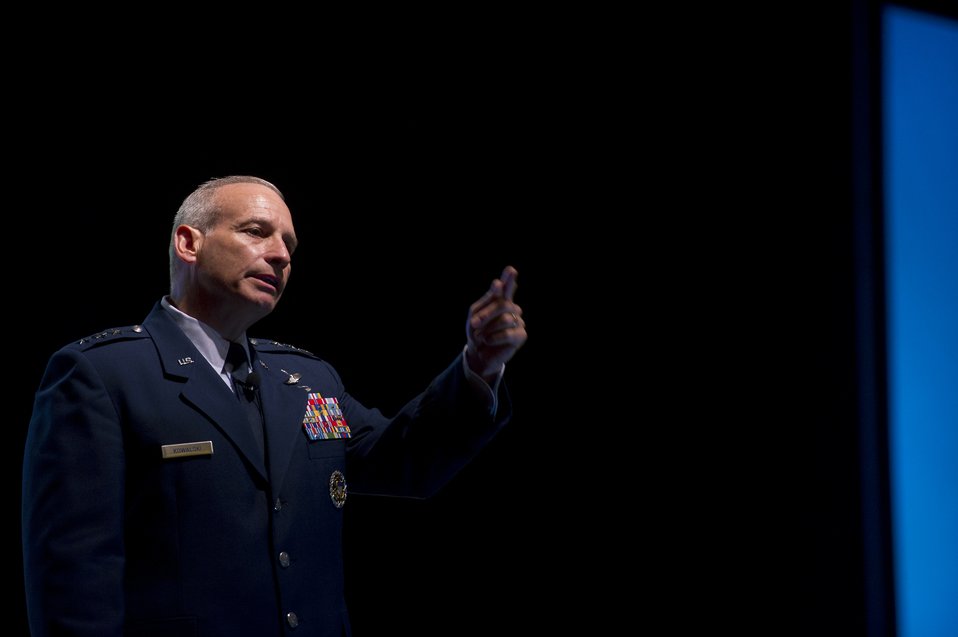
Air Force Global Strike Command

Lt. Gen. Jim Kowalski, the commander of Air Force Global Strike Command, speaks to Airmen about Global Strike Command and efforts to strengthen the nuclear enterprise July 26, 2011, the Air Force Sergeants Association's Annual Professional Airmen's Conference in San Antonio. Some 600 Airmen participated in the event.